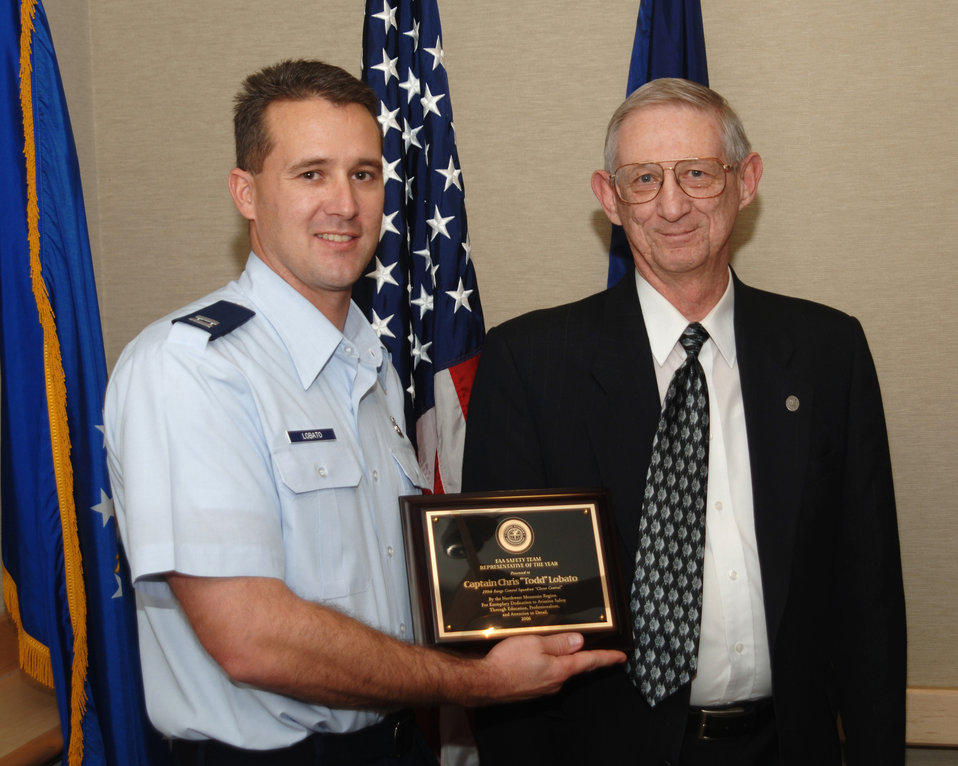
Air traffic controller honored by FAA

Capt. Todd Lobato, chief air traffic control training officer for the Utah Air National Guard's 299th Range Control Squadron, is honored as the Federal Aviation Administration's Regional Safety Team Representative of the Year. Bryan Neville of the FAA makes the presentation.